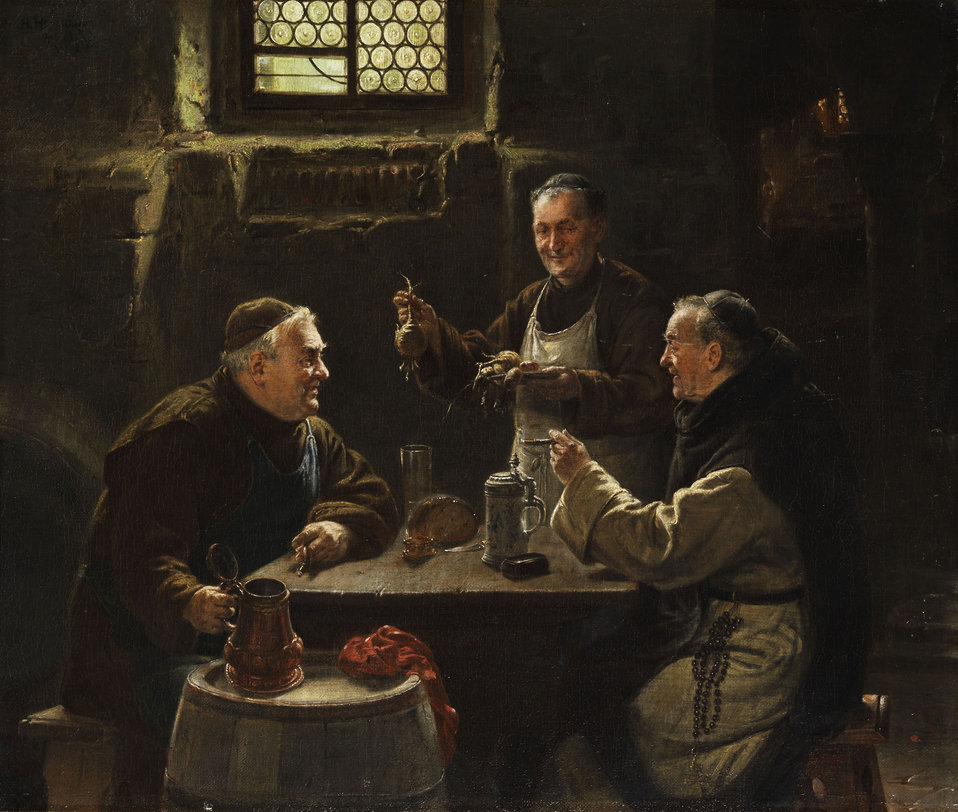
Deutsch: Drei Mönche bei der Vesper-Mahlzeit. Öl auf Leinwand. 41 x 48 cm. Signiert und ortsbezeichnet „München“.